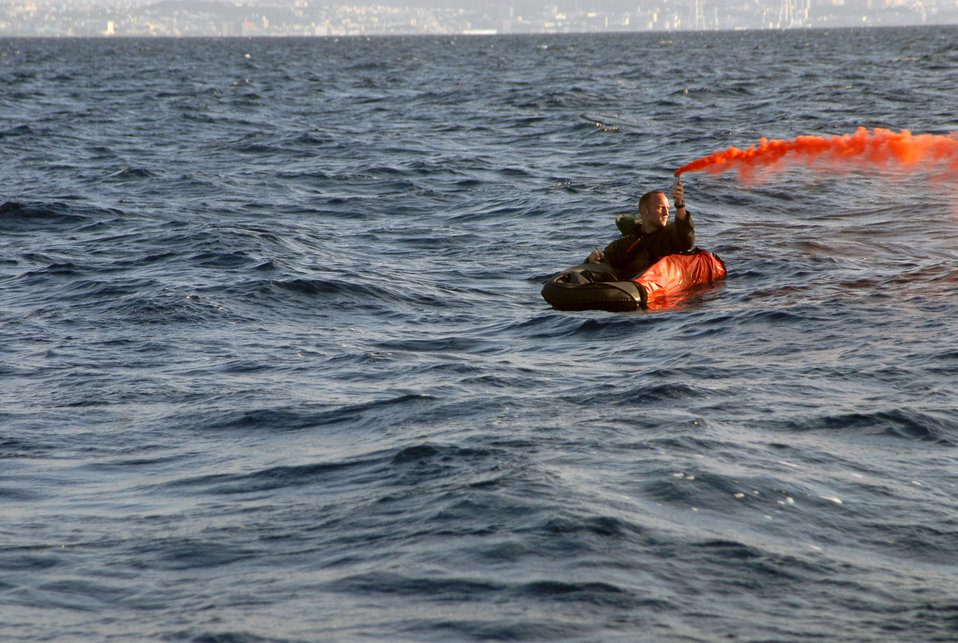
Airmen practice water rescue

Capt. Derek Flynn waits for rescue in the waters off the coast of Okinawa, Japan Captain Flynn was placed in the water Oct. 24 as part of a survival, evasion, resistance and escape exercise at Kadena Air Base, Okinawa, during operational readiness exercise Beverly High 08-1. Captain Flynn is with the 67th Fighter Squadron.